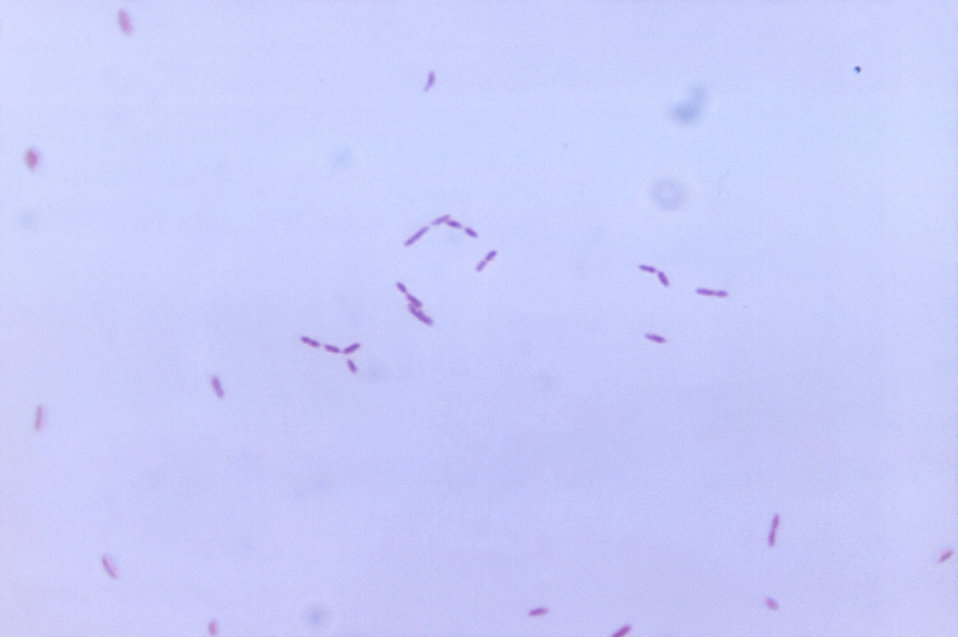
Magnified 956X, this Gram-stained photomicrograph depicted numerous Gram-negative Fusobacterium sp. bacteria, which had been cultured for a 24 hour time period on a thioglycollate medium.